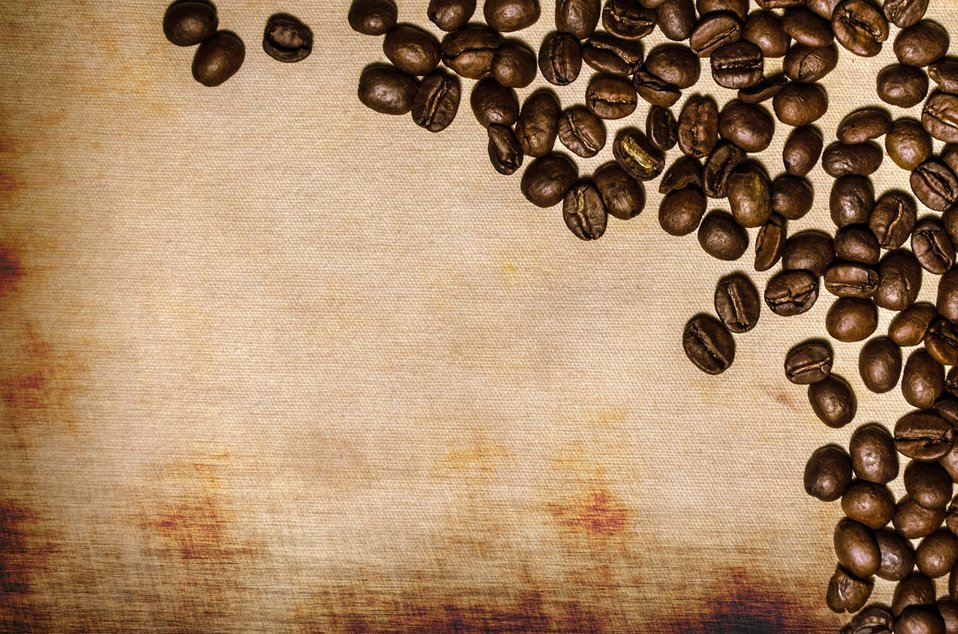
Coffee beans.